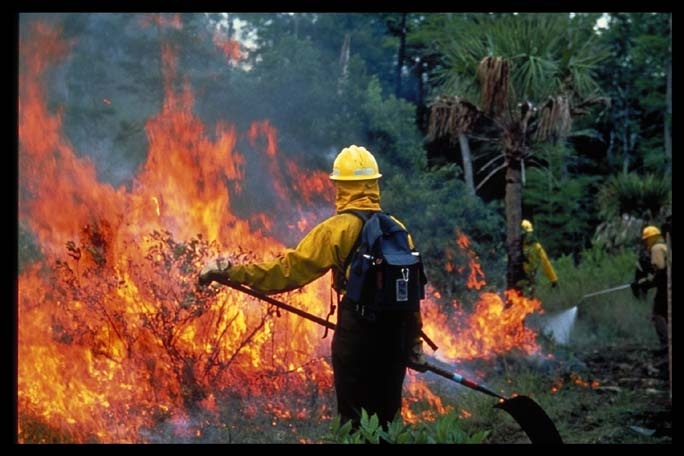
Wildland firefighter